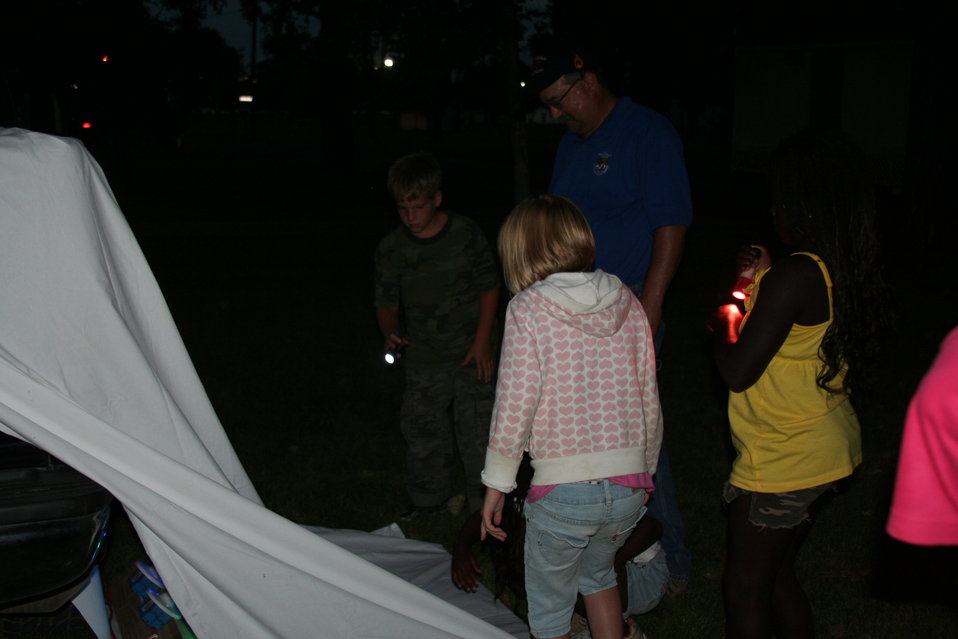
Creatures of the Night 2011

Looking for night time bugs.